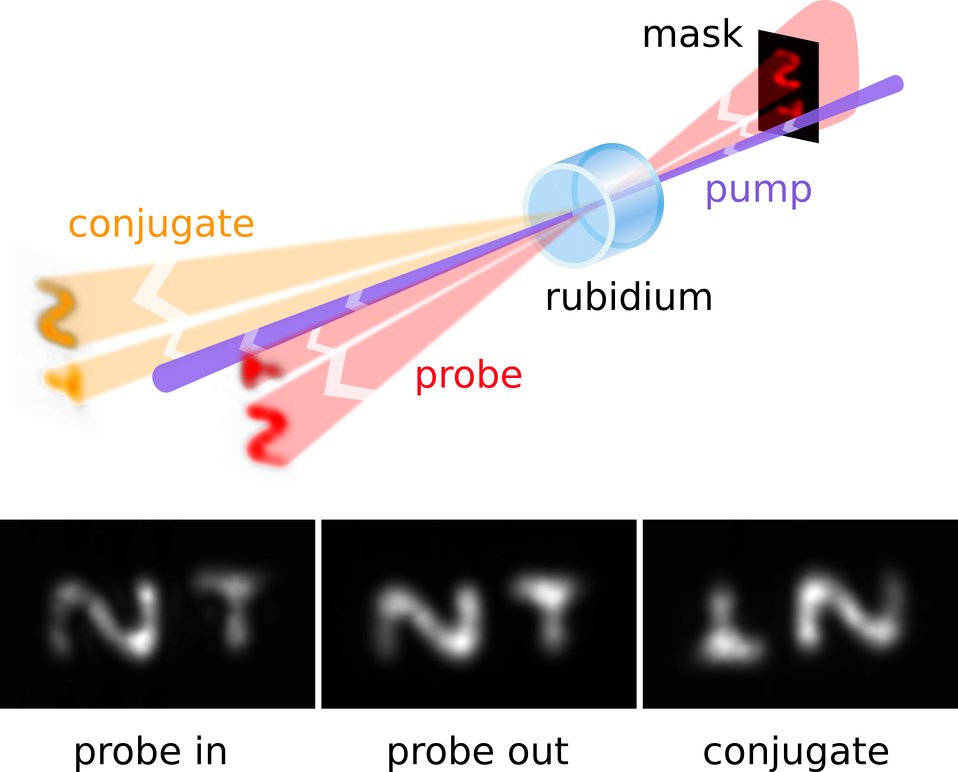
Quantum images

A laser beam (marked as 'probe') first passes through a mask that imprints a visual pattern. Along with a second laser beam (marked 'pump'), it enters a cell containing a gas of rubidium atoms. Interactions between the rubidium gas and the beams produce an amplified version of the imprinted image as well as a second version of the image, rotated 180 degrees around the pump. The bottom panel shows, from left to right, an incoming probe beam imprinted with the letters 'N' and 'T,' an outgoing probe beam with an amplified image, and an upside-down version of the letters. The middle image is 'entangled' with the rightmost image; the images' changes over time are highly related to one another.

Credit: V. Boyer et al., JQI